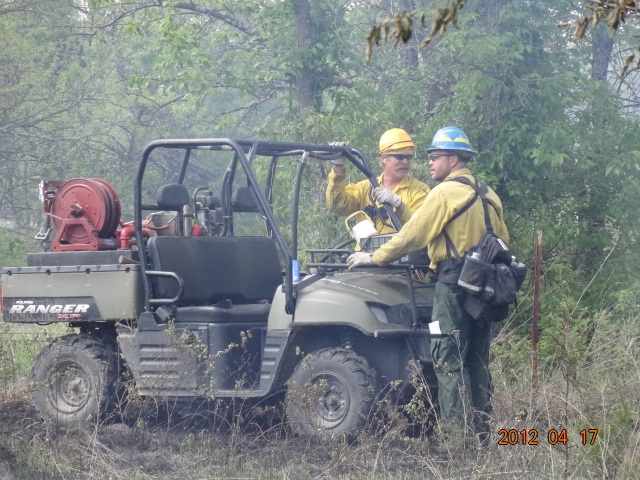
Fire Management in the Tall-grass Prairie

Fire is used as a management tool in the Tall-grass Prairie.